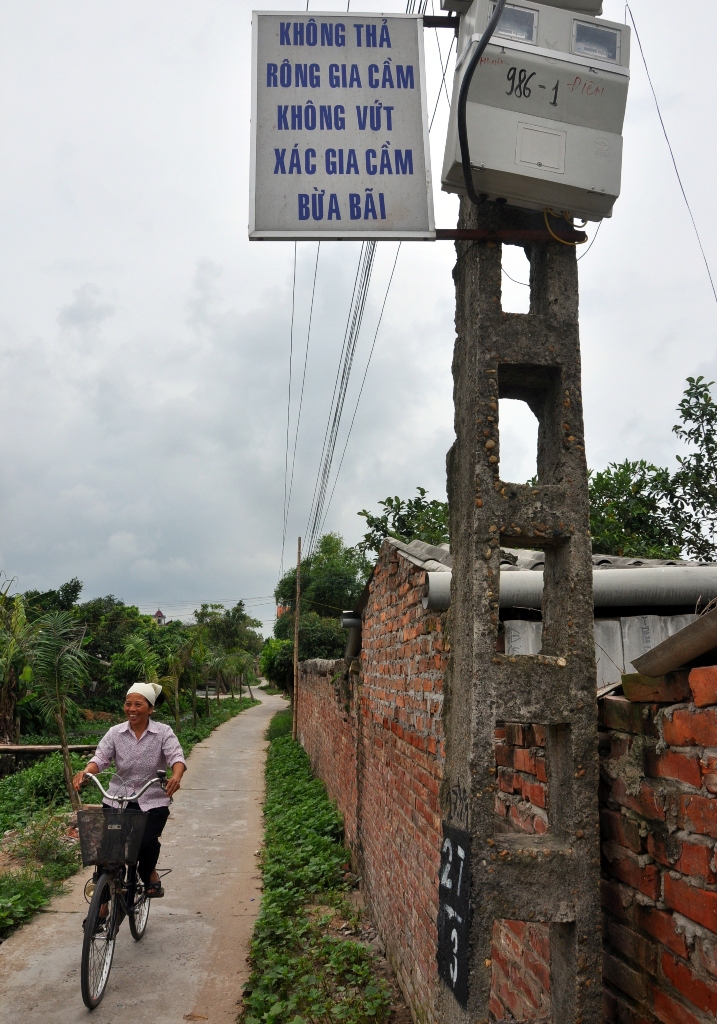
USAID helps local authorities combat bird flu from rural communities to markets throughout Vietnam